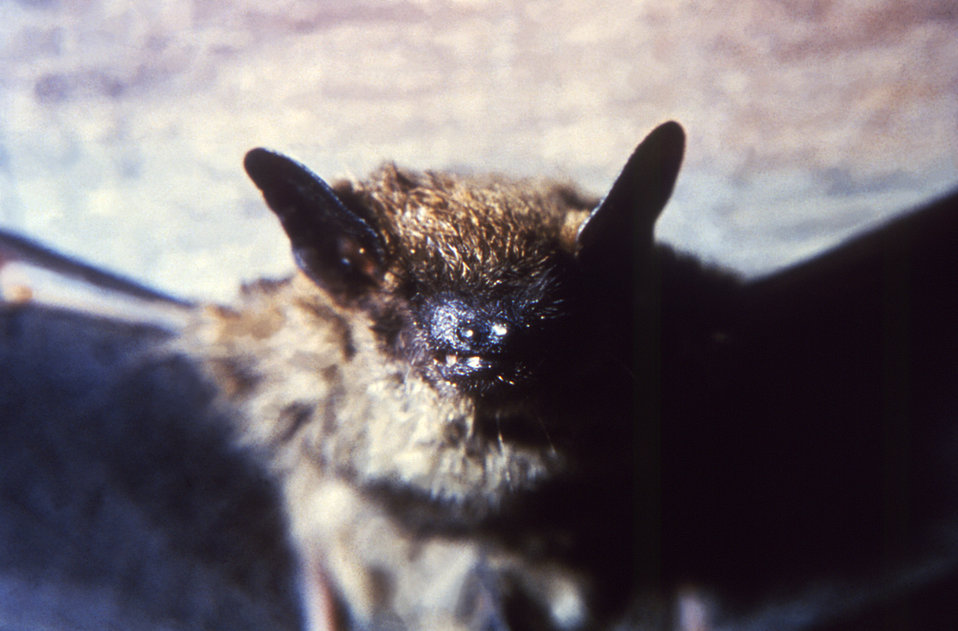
A brown bat

This is an anterior view of the face of a Myotis Lucifugus, or Little Brown Bat, found in Trenton, N.J.